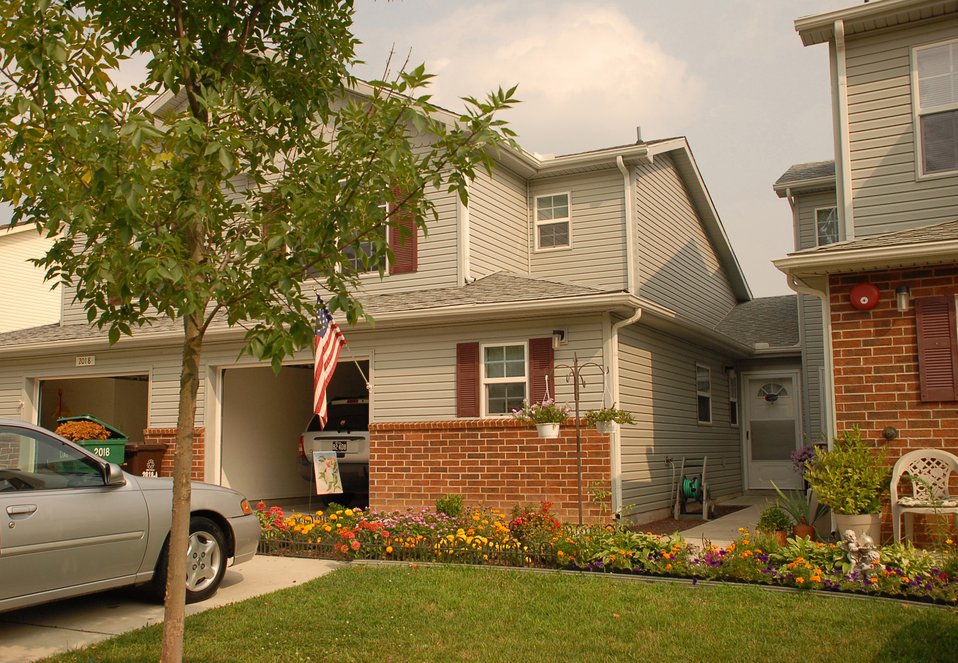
Dover housing to claim award

New homes on Dover Air Force Base, Del., are currently being benchmarked Air Force-wide as base officials teamed with the civilian partners of Pinnacle and Hunt Development Group were selected as the 2007 Professional Housing Management Association Outstanding Housing Installation Team Award winners.